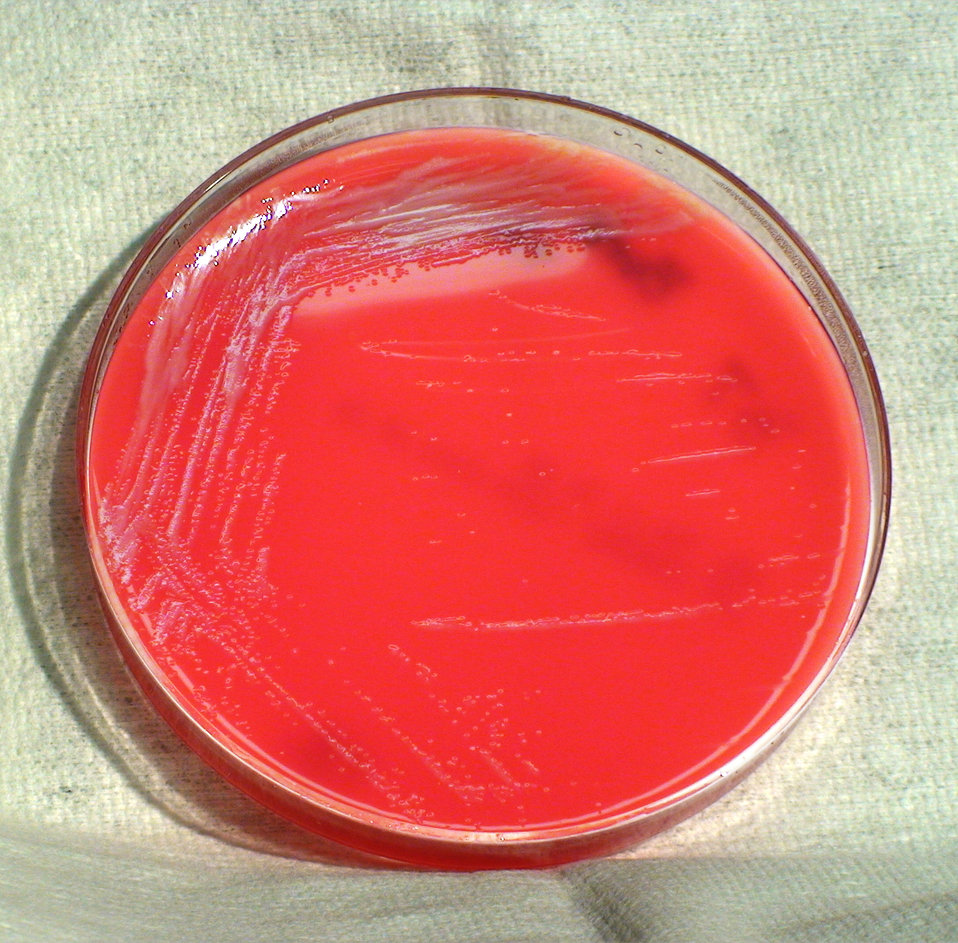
This photograph depicts the colonial morphology displayed by Gram-negative Burkholderia thailandensis bacteria, which was grown on a medium of sheep's blood agar (SBA), for a 24 hour time period, at a temperature of 37�C. See PHIL 12424, for a closer view of these bacterial colonies. Also, see both PHIL 12401 and 12402, for views of this bacterial specie, grown on the same medium, at the same temperature, however, for a longer period of time (48hr). PHIL 12408 and 12409 also display B. thailandensis colonial growth on the same medium, but at a higher temperature (42�C), and at twice the time period (48hr). Finally, PHIL 12431 and 12432 display this specie's bacterial growth, again on SBA, and for the same amount of time (24hr), but at a greater temperature (42�C).